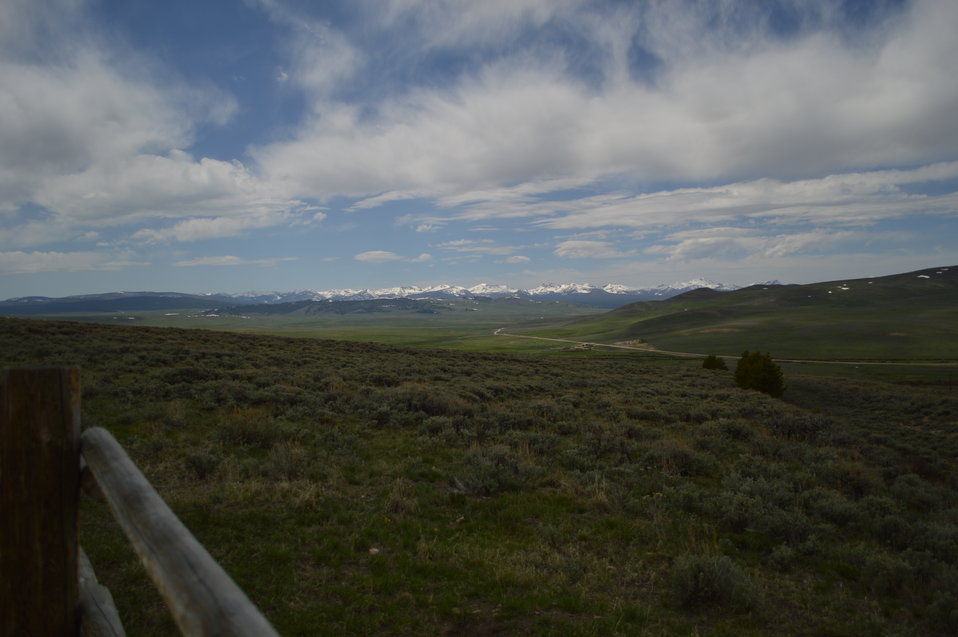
Regional Leadership Visit to Montana 2014